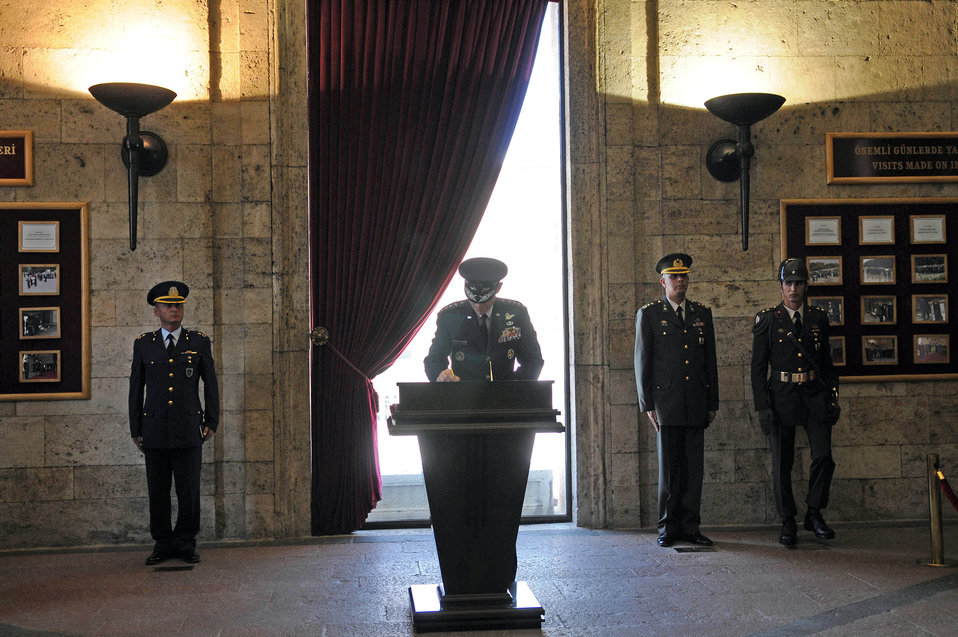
CSAF visits Turkey

Air Force Chief of Staff Gen. Norton A. Schwartz writes a message in a visitor's log at Anitkabir, a memorial and mausoleum in Ankara, Turkey, honoring Mustafa Kemal Ataturk, the founder of the Republic of Turkey. During the visit to the memorial July 19, 2010, General Schwartz and his wife Suzie participated in a wreath-laying ceremony along with Airmen stationed in Ankara. The ceremony was the first event during General Schwartz's multi-day visit to Turkey.